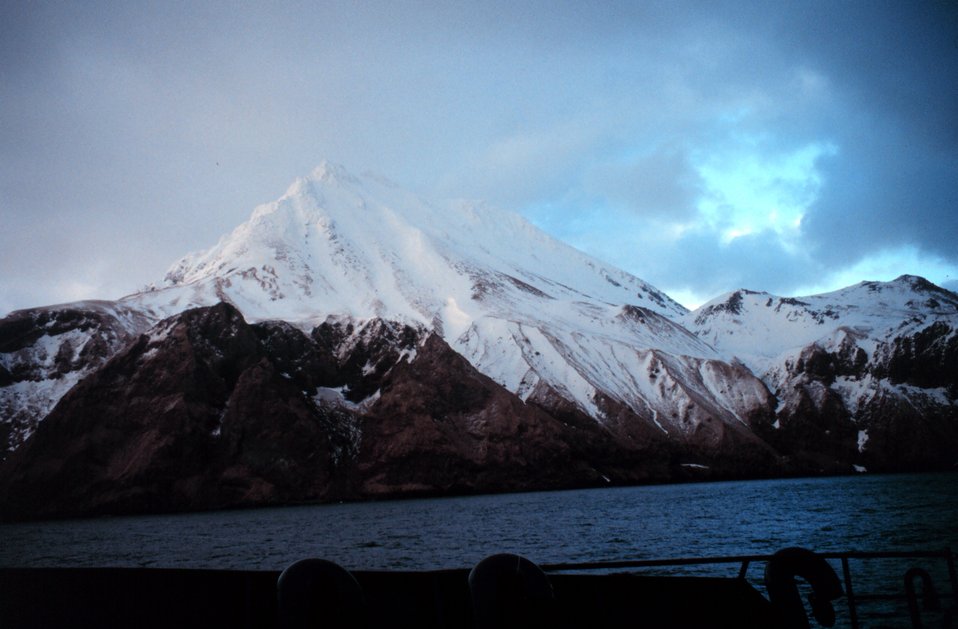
An Aleutian peak and coastline